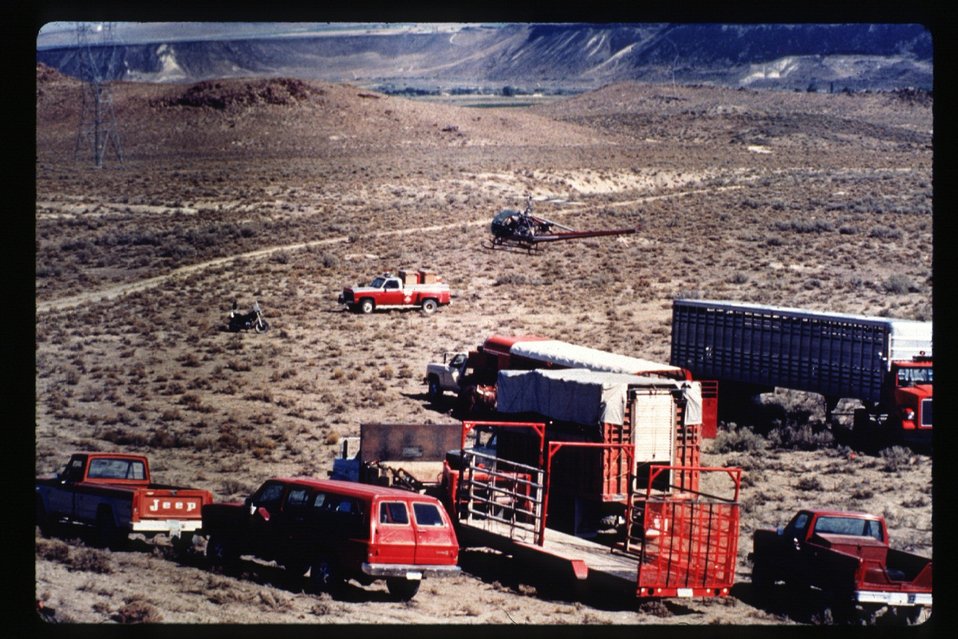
Wild horse transportation Wild Horse and Burro Adoption Program LSRD Lower Snake River District